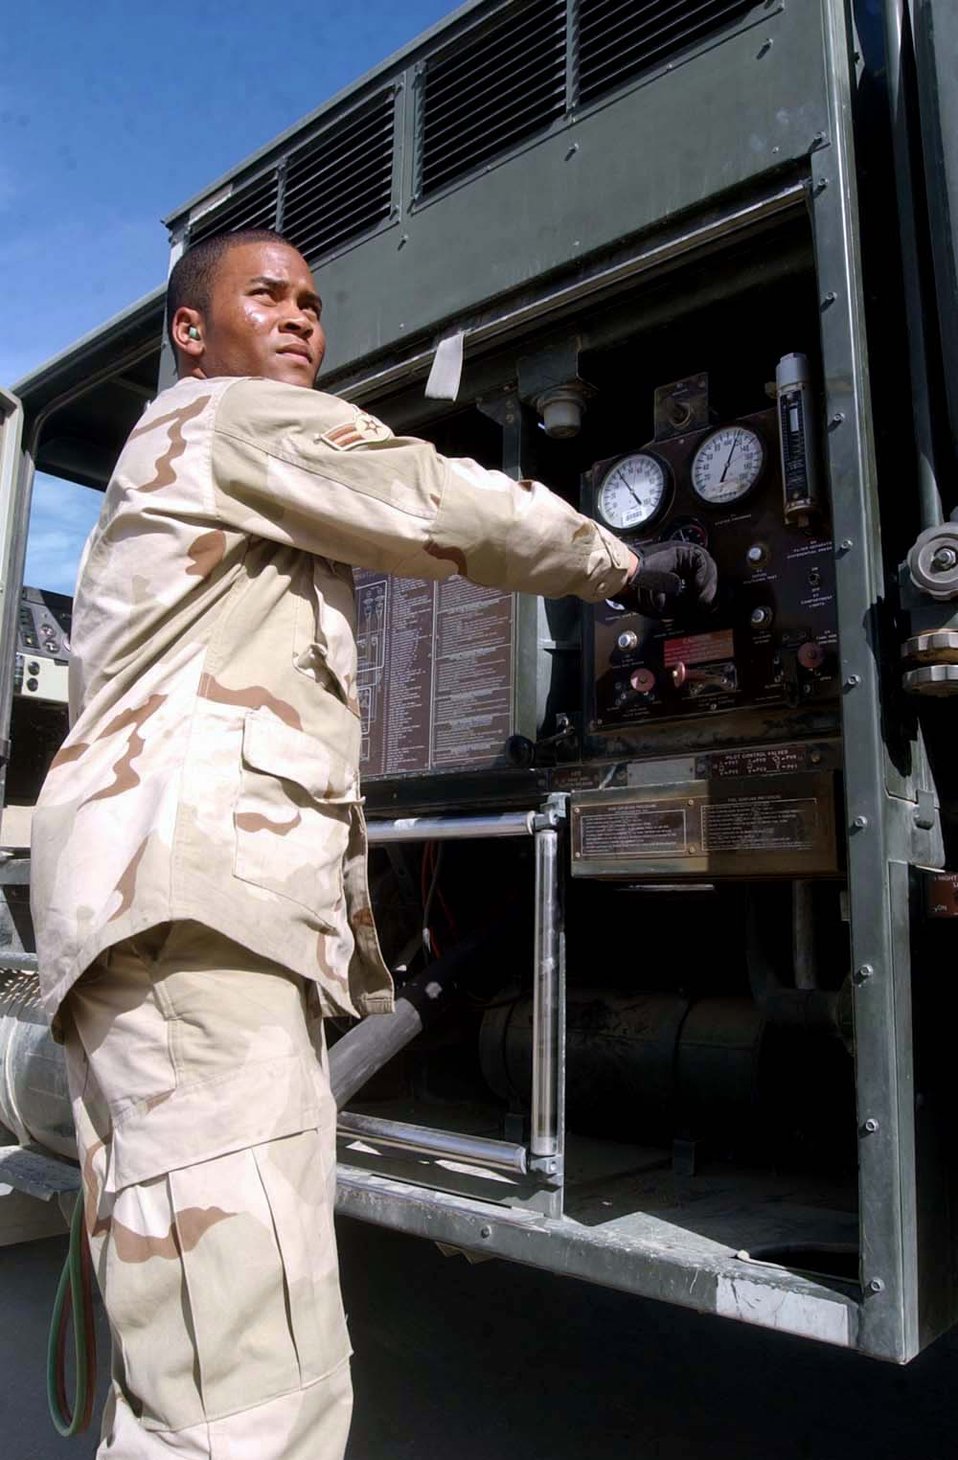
Bagram fuels

BAGRAM AIR BASE, Afghanistan -- Airman 1st Class Omar Foster adjusts the throttle of an R-11 refueler during an A-10 Thunderbolt II refueling operation. Airman is assigned to the 455th Expeditionary Operations Group fuels flight, and he is deployed from Hurlburt Field, Fla.